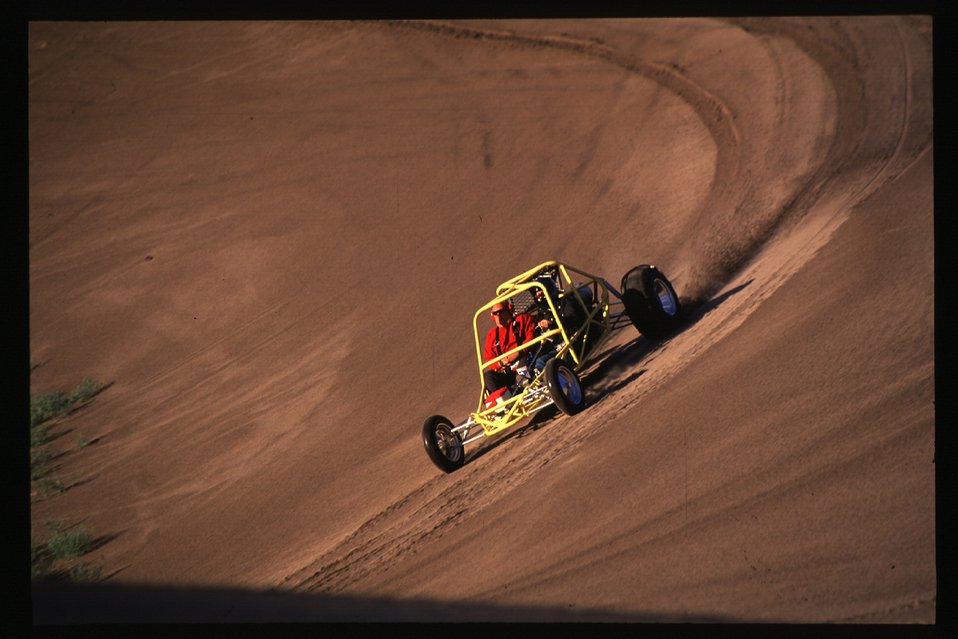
Recreation St Anthony Sand Dunes Off Highway Vehicles Idaho Falls Field Office USRD Upper Snake River District